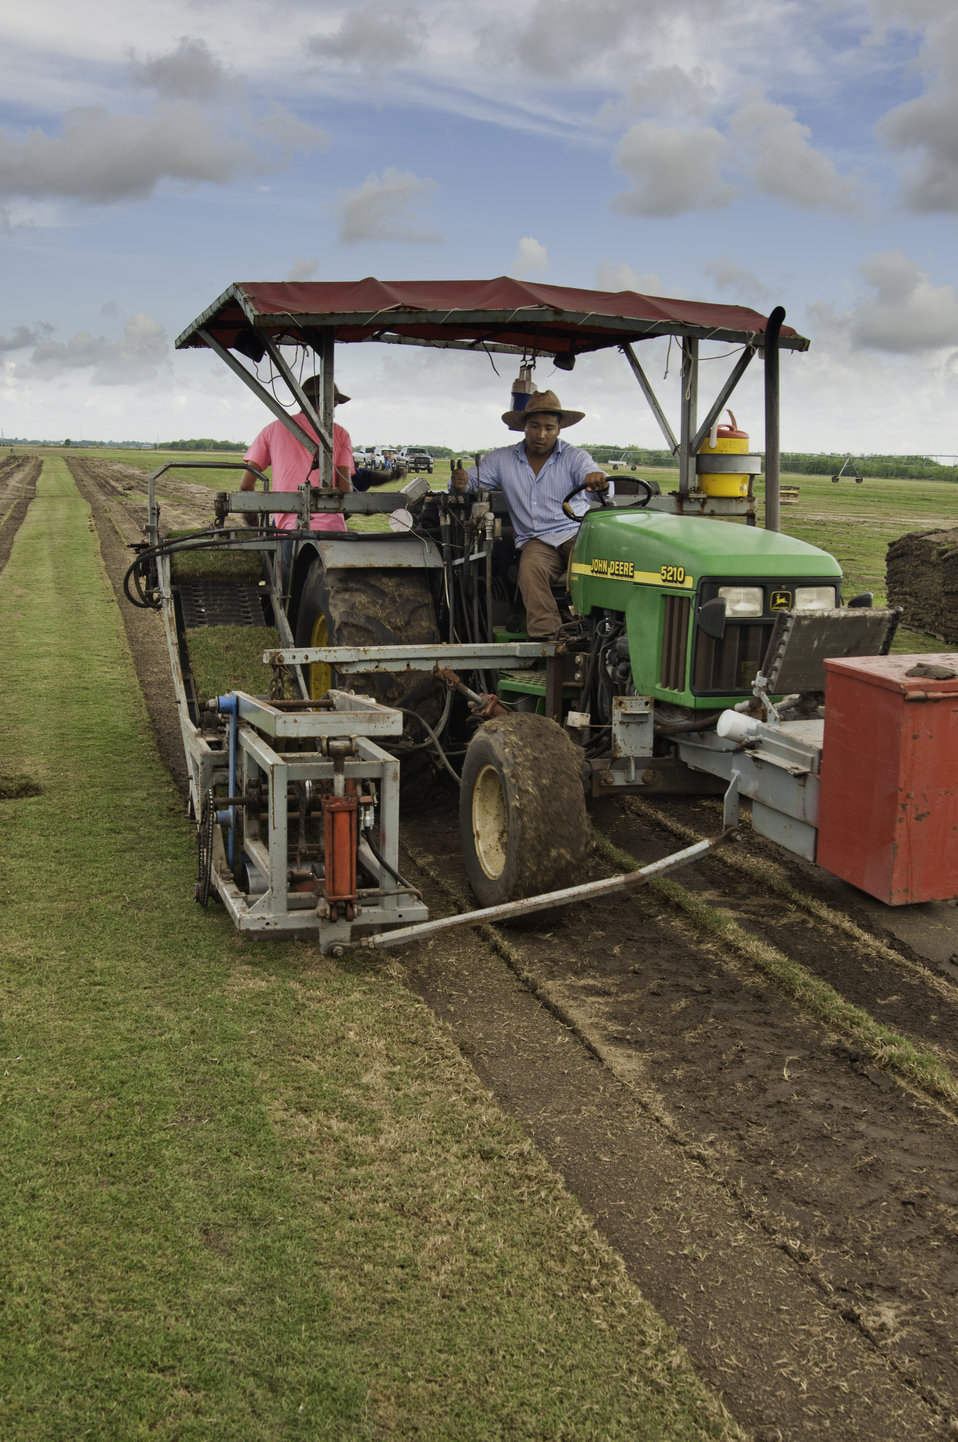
Sod used in landscaping is harvested on the Quality Turf Farms in Guy, TX on Aug. 23, 2013.